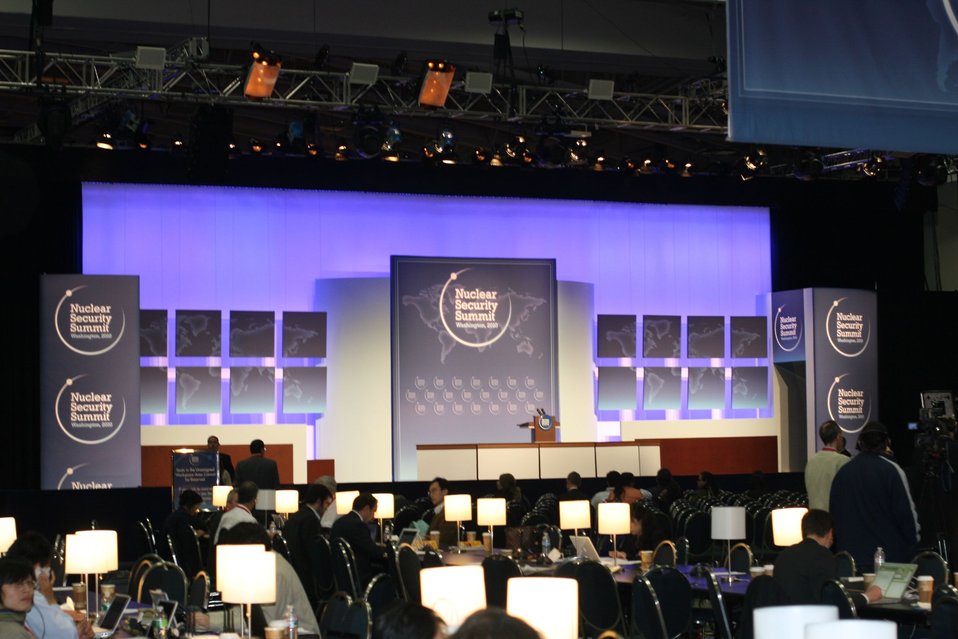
View of the Nuclear Security Summit

A portrait of the Nuclear Security Summit at the Ronald Reagan Building in Washington, D.C., April 13, 2010.